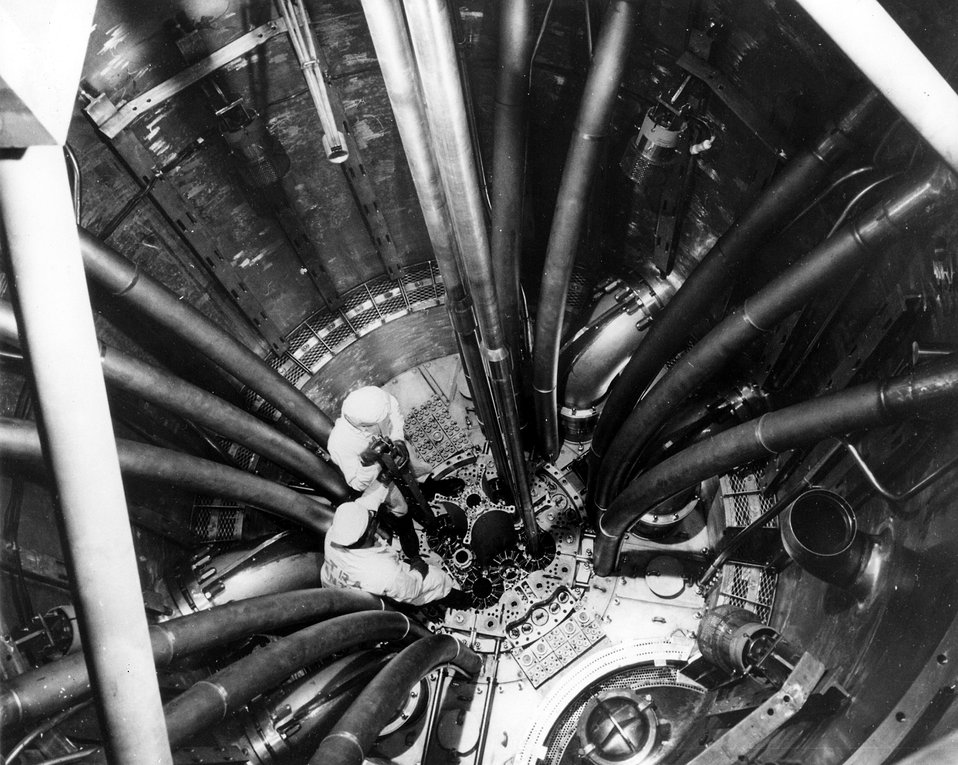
National Reactor Testing Station, Idaho... Technicians load fuel inside the pressure vessel of the 250-megawatt Advanced Test Reactor (ATR) at the Atomic Energy Commission's National Reactor Testing Station in Idaho. Circa 1967.